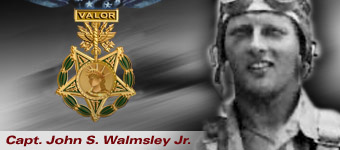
Capt. John S. Walmsley Jr. history spotlight graphic